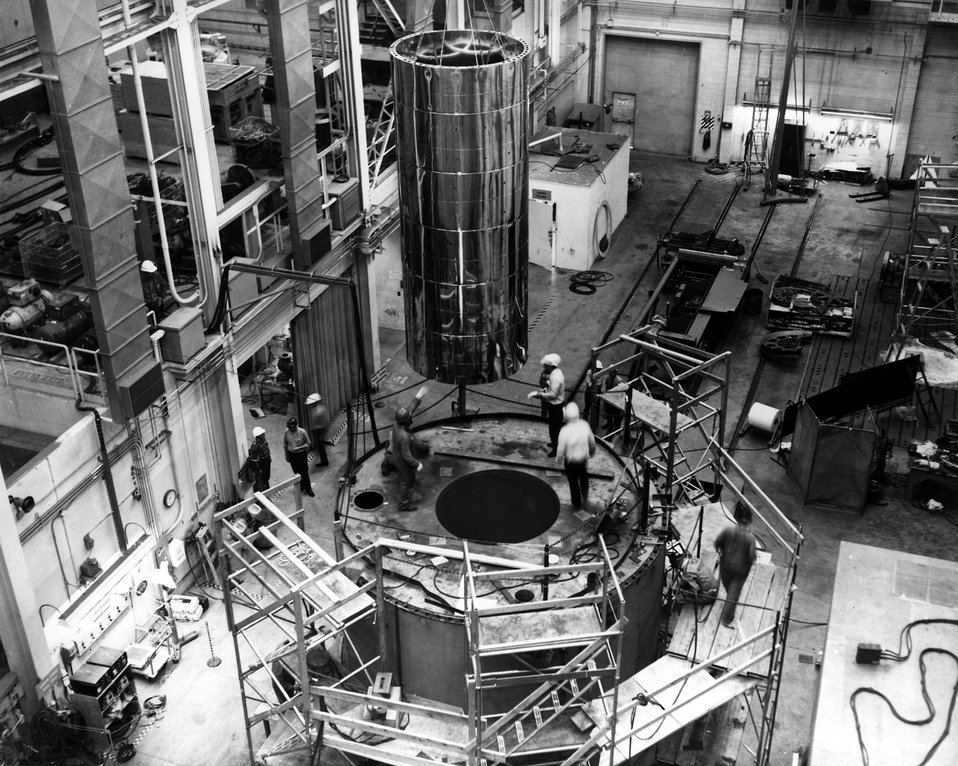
A stainless-steel thermal insulation cylinder for the reactor vessel is lowered into the shield tank on the LOFT (Loss of Fluid Test) Mobile Test Assembly. Circa 1972.